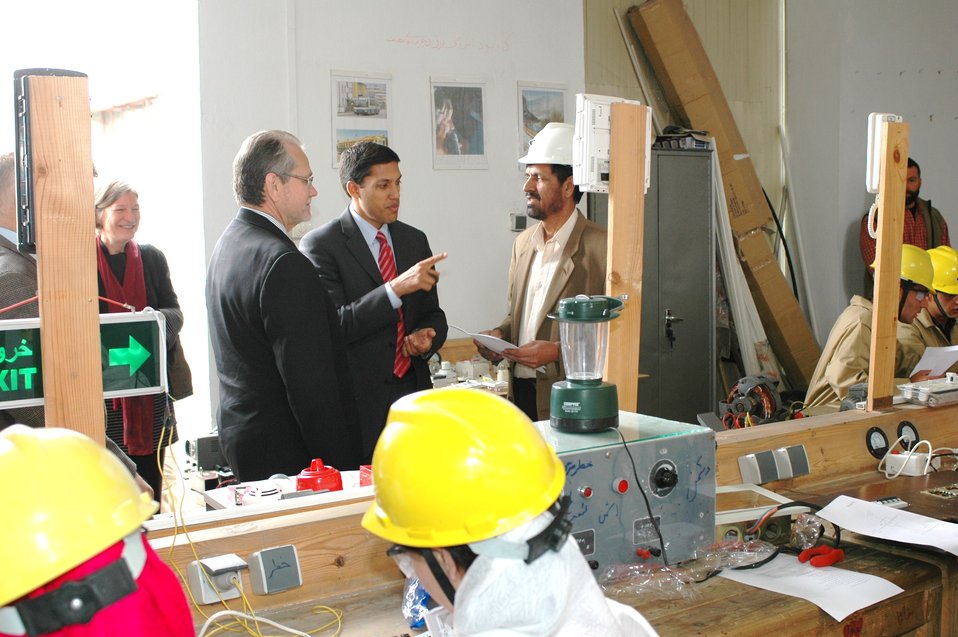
Dr Shah Visits Votech in Kabul